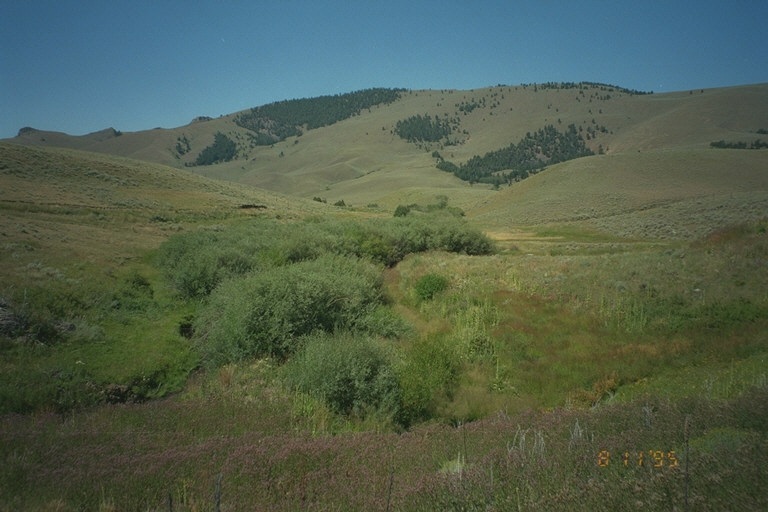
Riparian area Public Lands Salmon Field Office UCSC Upper Columbia Salmon Clearwater District